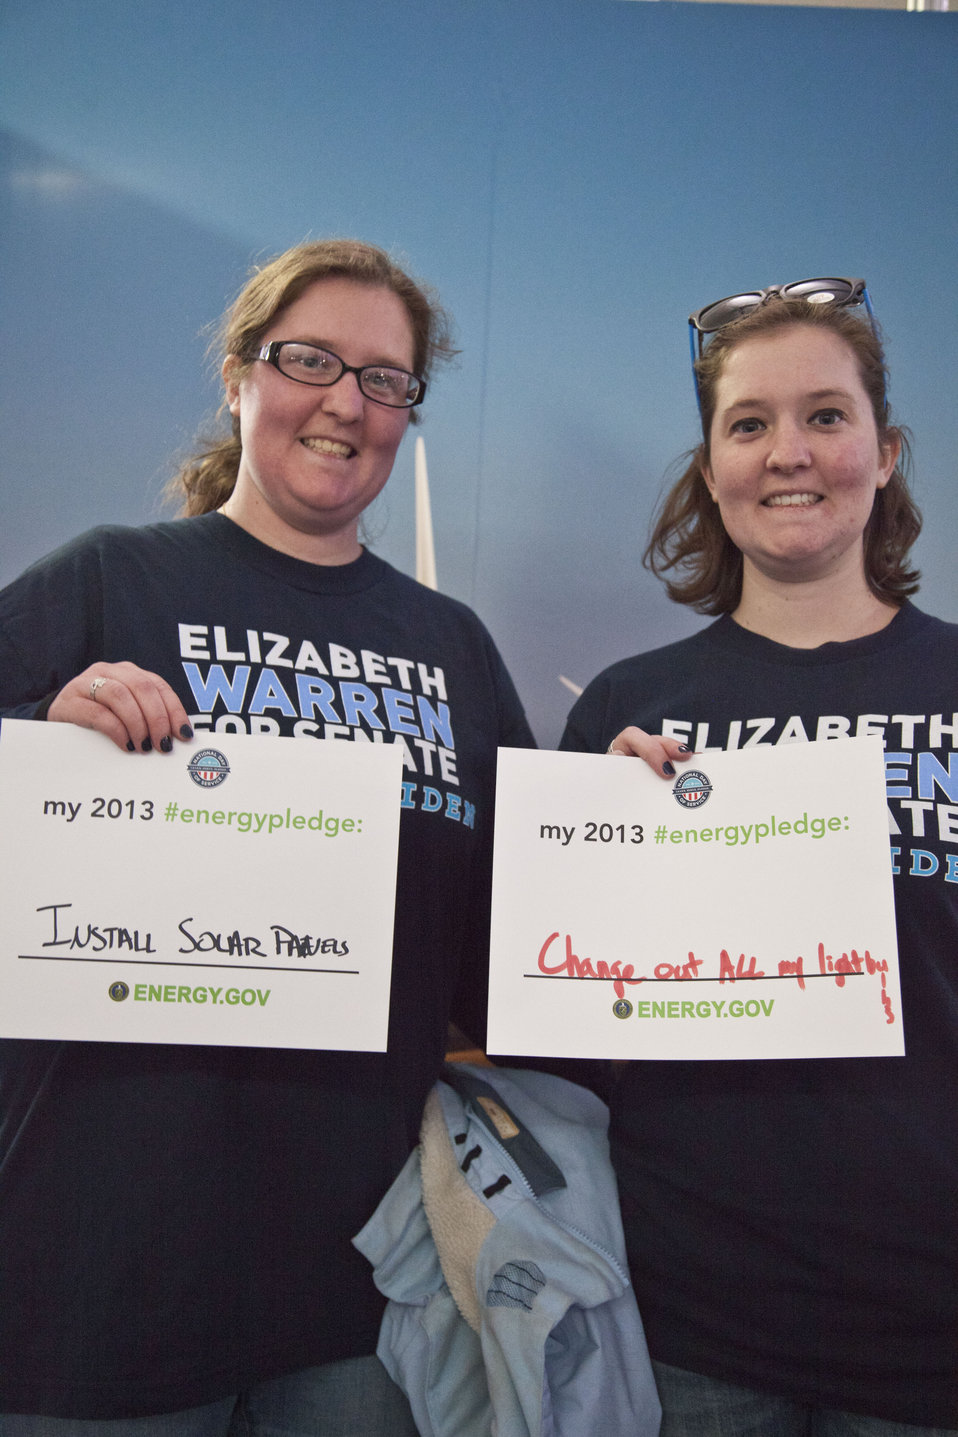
What's your #energypledge?